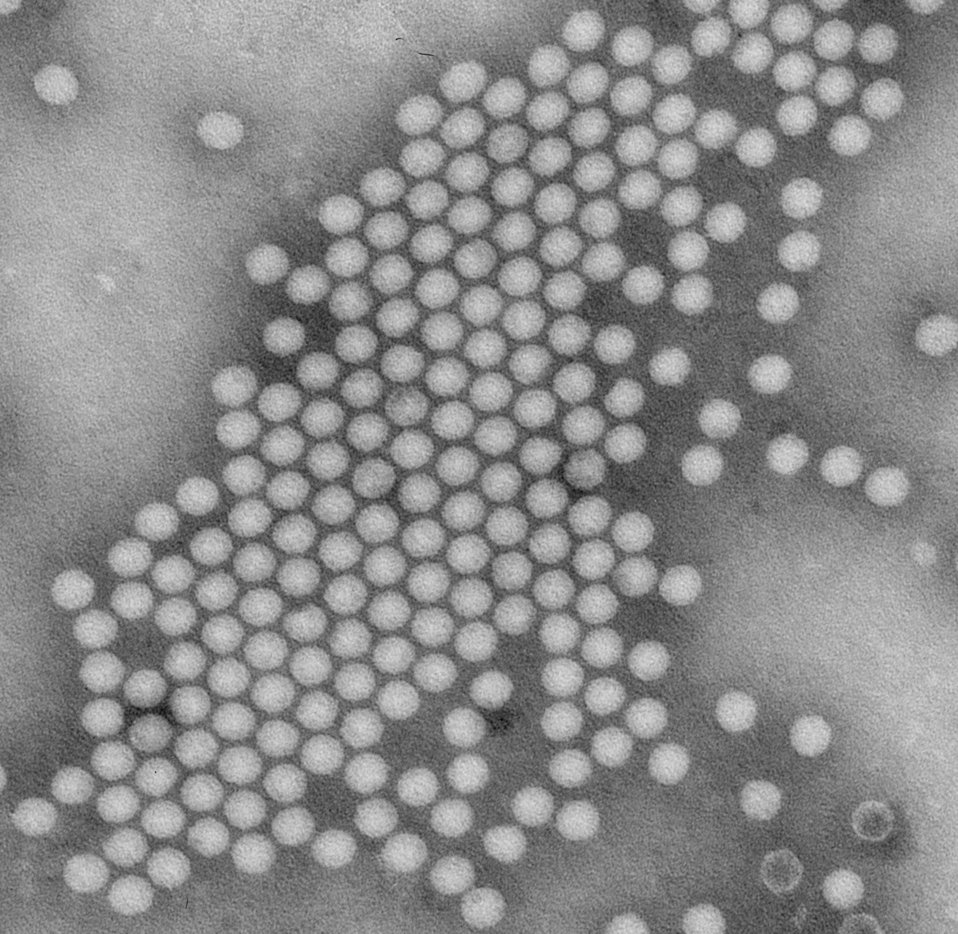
Transmission electron micrograph, negative stain image of the polio virus.